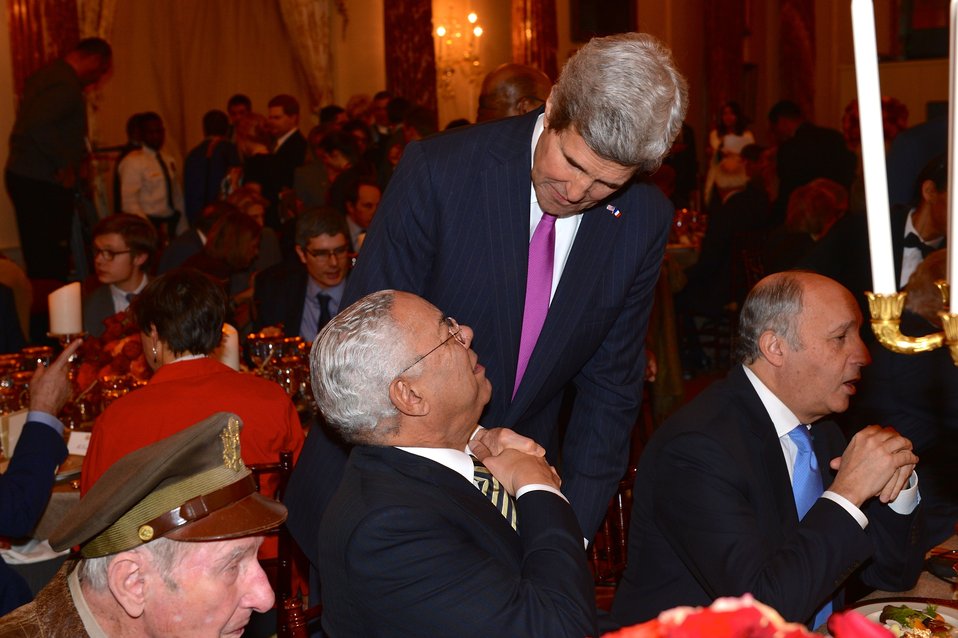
Secretary Kerry Shakes Hands With Former Secretary Powell

U.S. Secretary of State John Kerry shakes hands with former Secretary of State Colin Powell during a State Lunch for French President Francois Hollande that Secretary Kerry co-hosted with Vice President Joe Biden at the U.S. Department of State in Washington, D.C., on February 11, 2014.